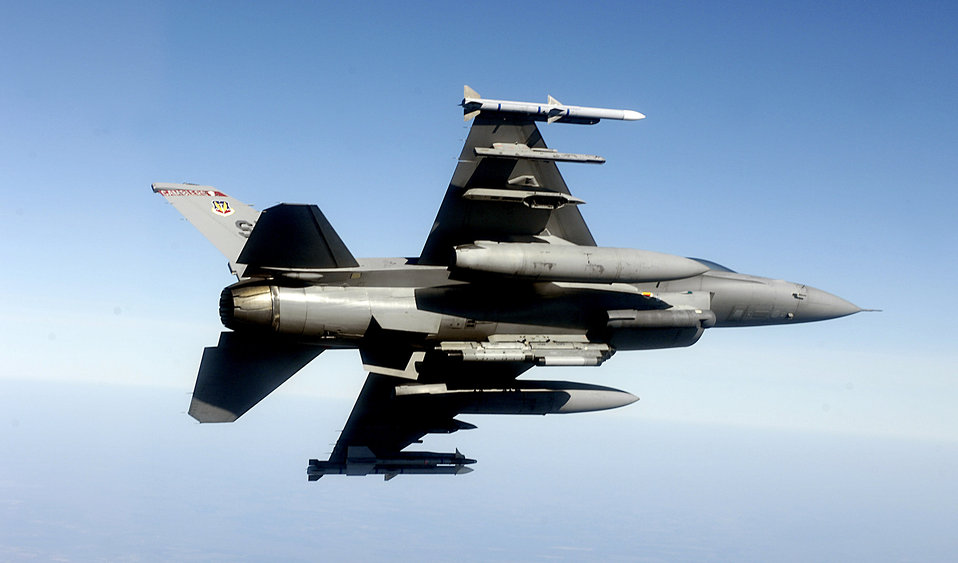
Exercise Iron Thunder

Maj. Marc Himelhoch flies an F-16 Fighting Falcon looking for simulated targets and hostile aircraft near Shaw Air Force Base, S.C. Feb. 7 during Exercise Iron Thunder, a multi-service, multi-national large force exercise with more than 100 aircraft participating. The major is assigned to the 77th Fighter Squadron at Shaw AFB.